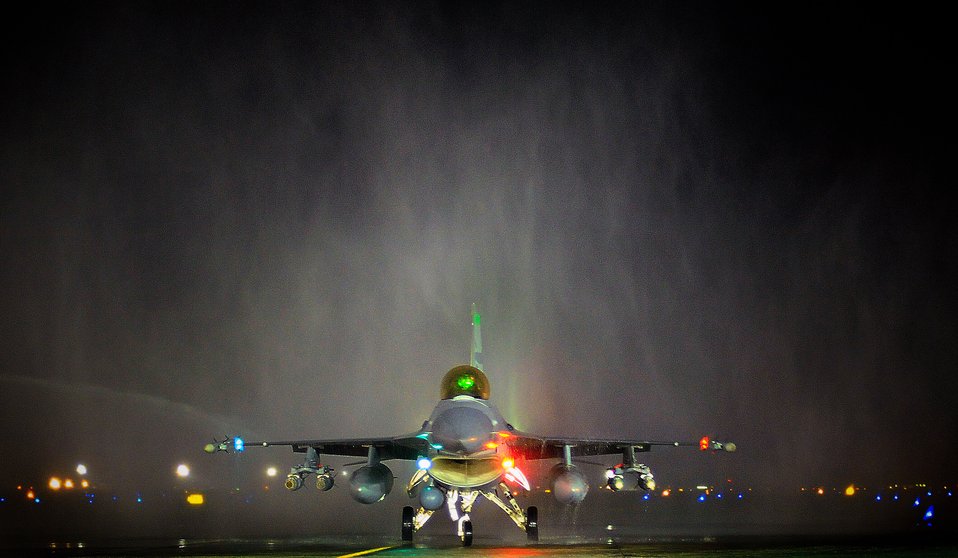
Celebrating a milestone

Col. David Romuald, 332nd Air Expeditionary Operations Group deputy Commander, taxis under the spray of two fire department crash trucks Dec. 2 at Joint Base Balad, Iraq, after he completed his 3,000th flying hour in an F-16 Fighting Falcon. Approximately 150 F-16 pilots have surpassed this milestone.